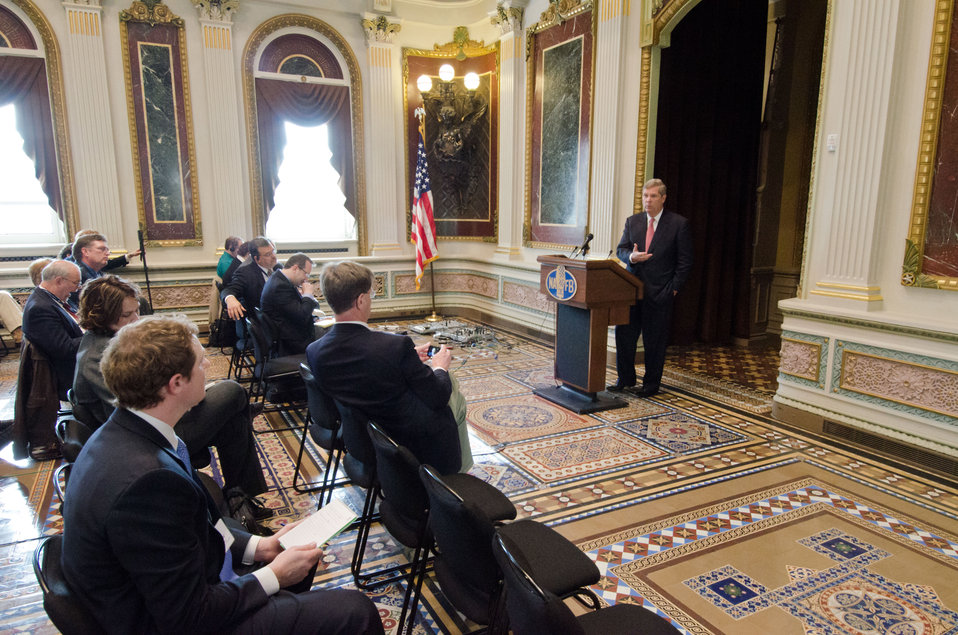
Agriculture Secretary Tom Vilsack discussed the strength of the rural economy at the spring National Association of Farm Broadcasters (NAFB), “Washington Watch” member retreat in Washington, D.C. This year the meeting was held in the Eisenhower Executive Office Building, Indian Treaty Room Tuesday, April 24, 2012 featuring United Sates Department of Agriculture and Obama Administration officials. This opportunity provides an occasion to highlight efforts to rebuild and revitalize rural America, including efforts for the agricultural community. NAFB is the recognized and trusted source of agricultural and rural lifestyle information for America with approximately 200 members who broadcast via radio in nearly every state in the country.